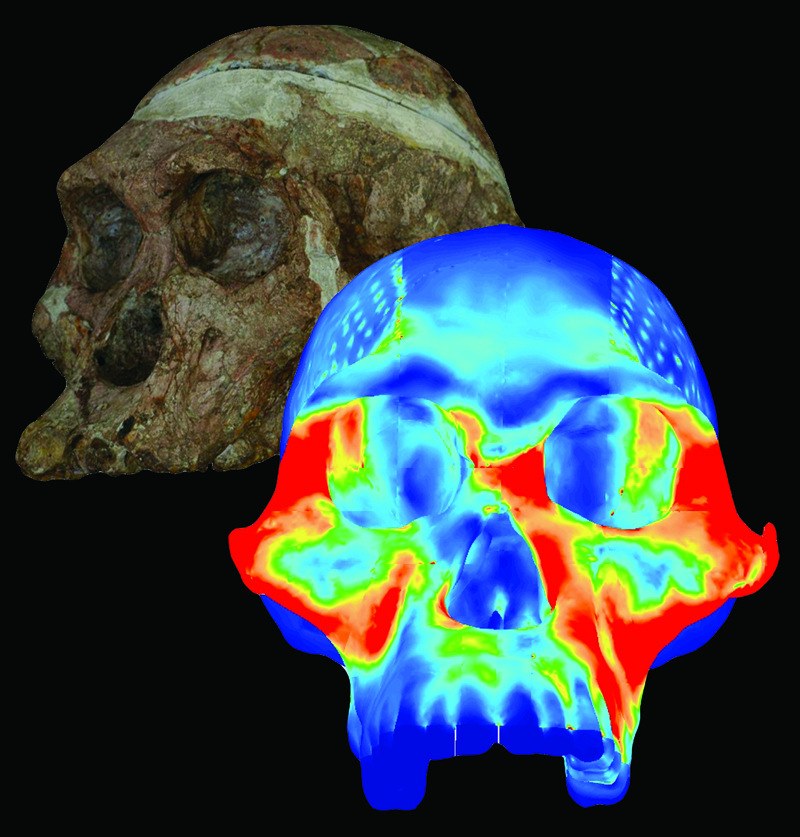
Toothsome Research: Deducing the Diet of a Prehistoric Hominid

Finite element model of a cranium of the early hominid Australopithecus africanus based largely on the specimen Sts 5 (background). Color mapping indicates the magnitude of strains associated with biting on a hard object with the premolar teeth. A combination of engineering, experimental, comparative and imaging analysis suggest that premolar loading was an important component of early hominin feeding behavior.

Credit: Strait, University of Albany, SUNY. Photograph of Sts 5 by Gerhard Weber